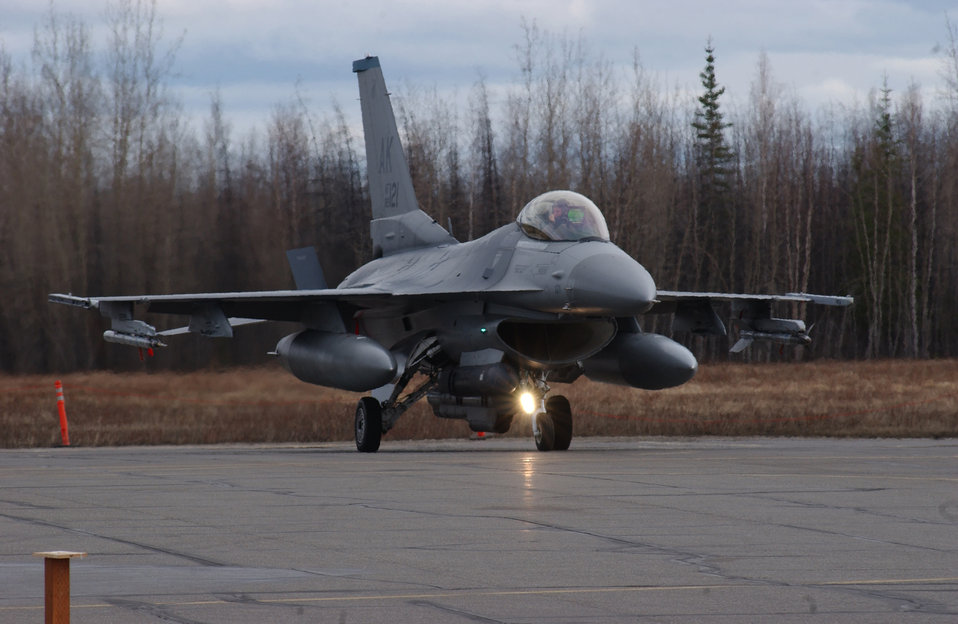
Time to taxi

EIELSON AIR FORCE BASE, Alaska -- An F-16 Fighting Falcon from the 18th Fighter Squadron waits to taxi to its parking spot during an operational readiness inspection here April 28.